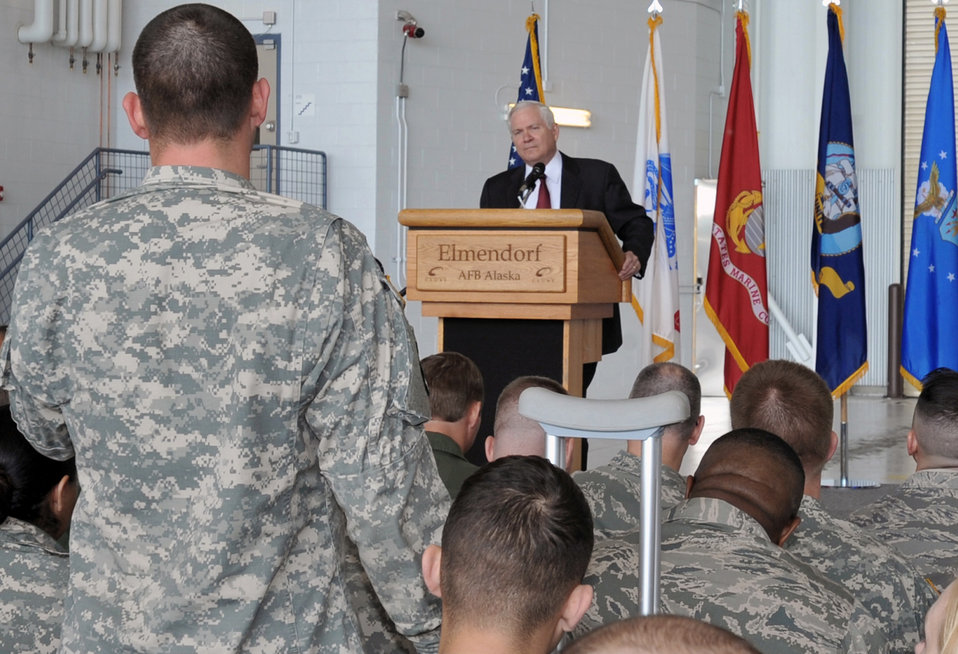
Gates visits Elmendorf, addresses servicemembers

A Soldier poses a question to Secretary of Defense Robert M. Gates during a June 1 town hall meeting at Elmendorf Air Force Base, Alaska. Secretary Gates came to Elmendorf AFB to discuss with military members how the war is affecting this base and their everyday lives.